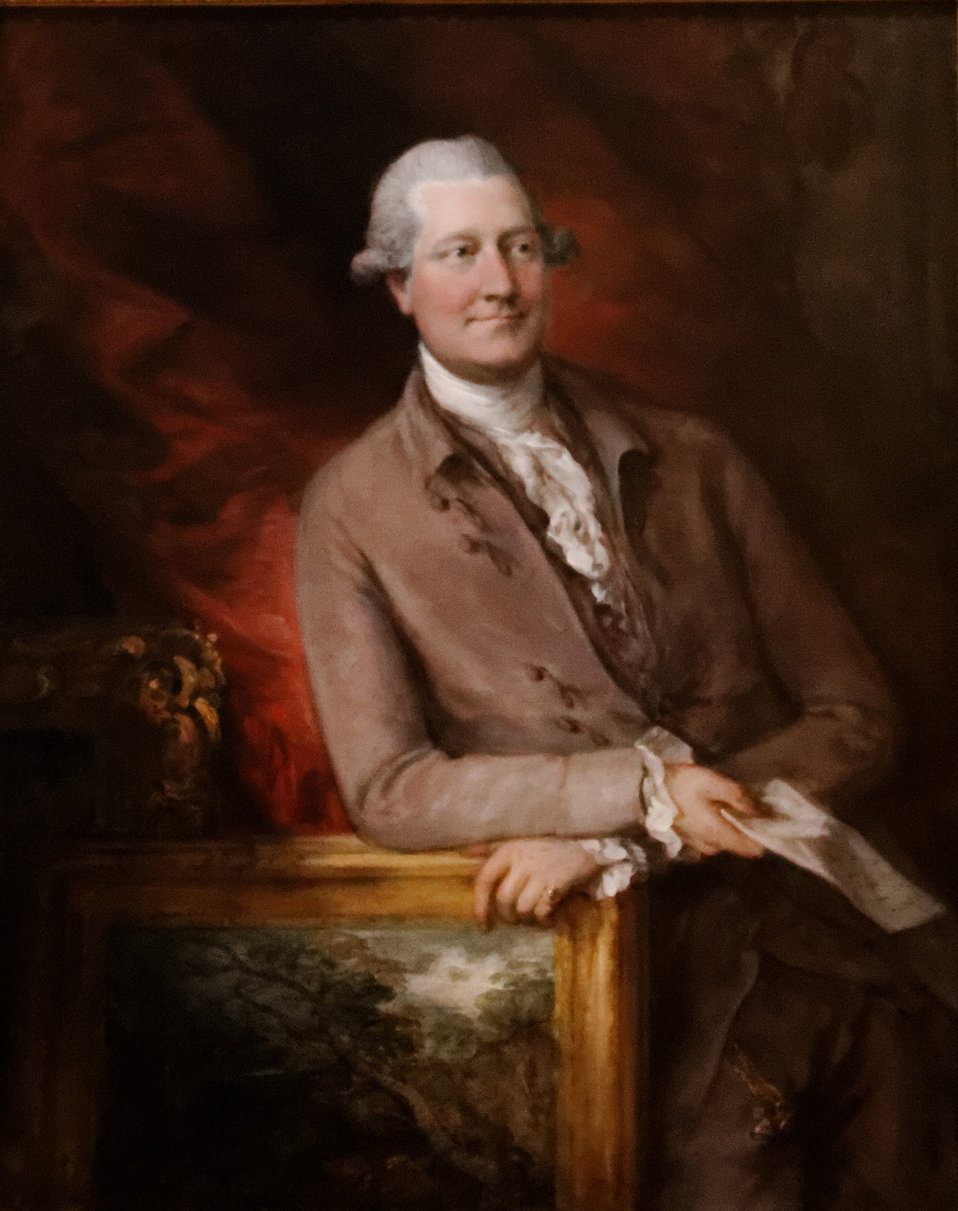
Thomas Gainsborough - Portrait of James Christie